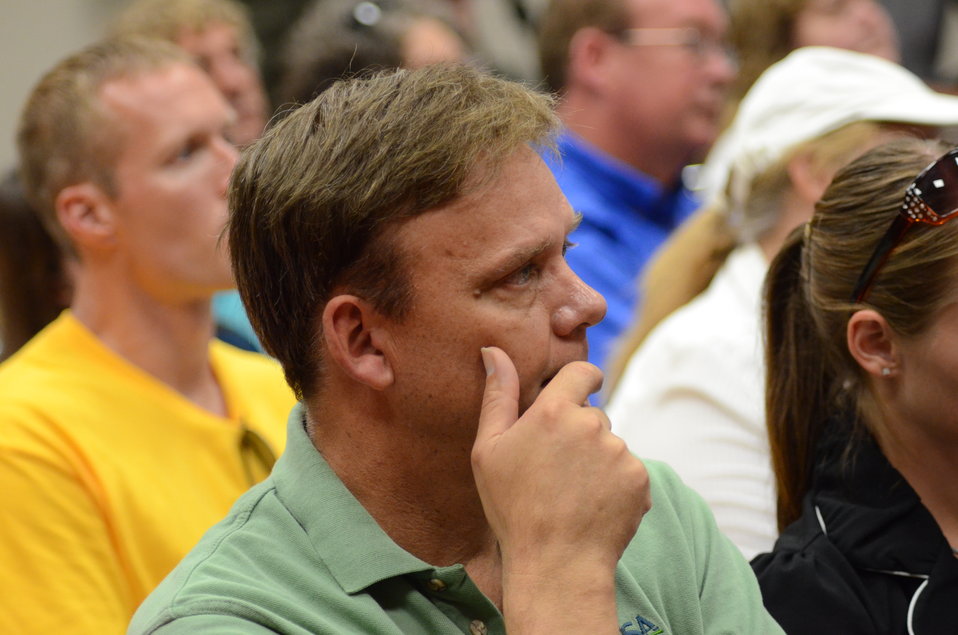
Members of the audience listen to Agriculture Secretary Tom Vilsack speaks at the White House Rural Forum at the Wisconsin State Fair, in West Allis, WI, on Thursday, Aug. 4, 2010, to businesses and community leaders, farmers and ranchers to explore ways federal, state and local officials can work together to improve economic conditions and create jobs. The forum is part of a series of White House Rural Roundtables that are being held across the country this summer with senior Administration officials.